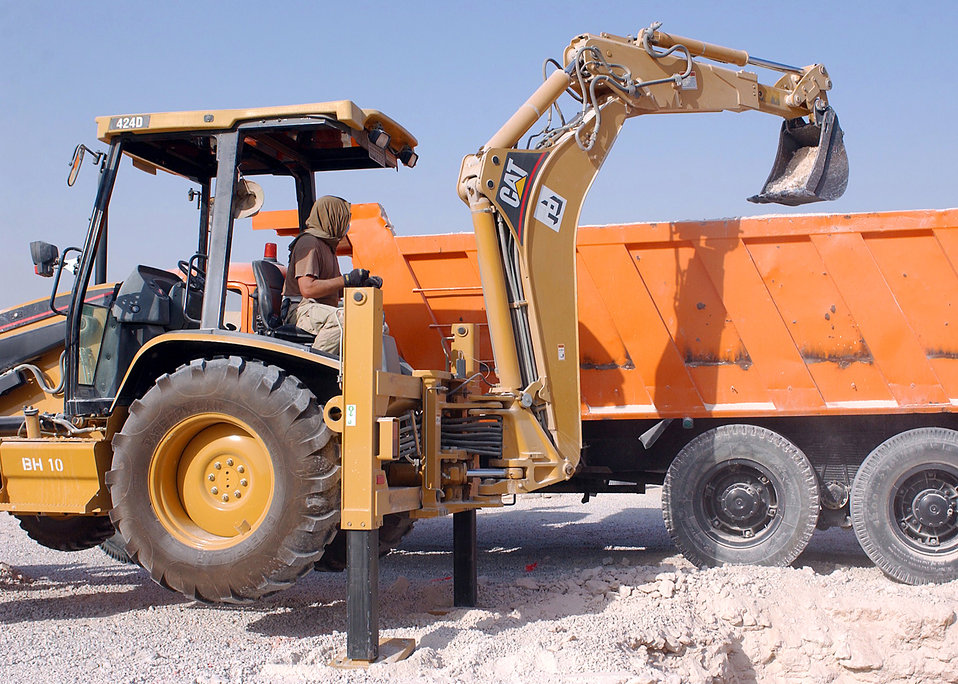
Diggin'

AL UDEID AIR BASE, Qatar -- Tech. Sgt. Carl Castell digs a manhole that will house cables for the 379th Expeditionary Communications Squadron.